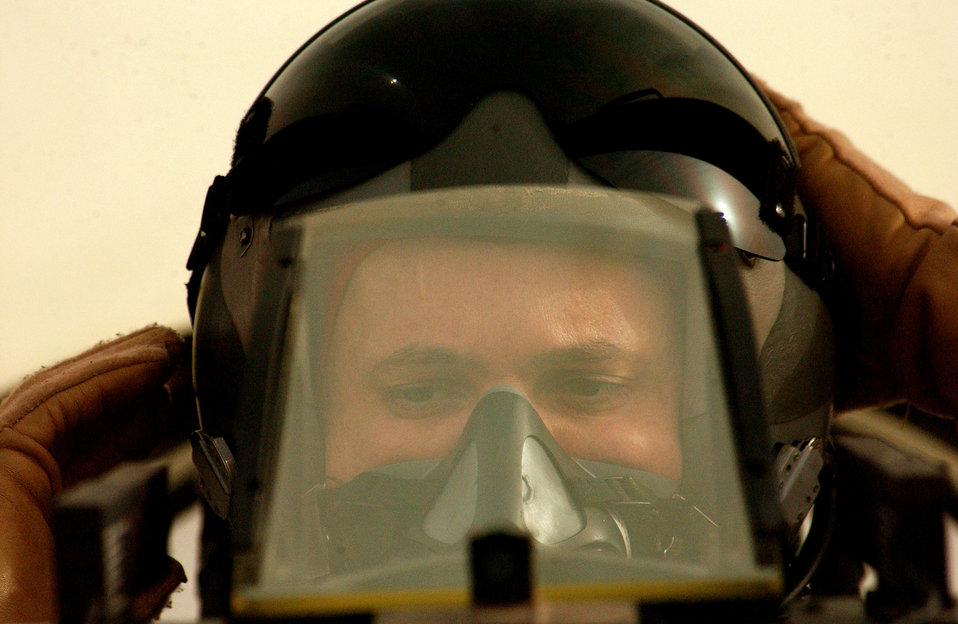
Gernert

OPERATION IRAQI FREEDOM -- Maj. Dan Gernert, an F-16CJ aircraft pilot deployed from the 77th Fighter Squadron, Shaw Air Force Base, SC, to the 363rd Expeditionary Fighter Squadron, adjusts his oxygen mask prior to taking off for a mission on March 27, 2003. Aircraft move around the clock to support Operation Iraqi Freedom at a forward deployed location in southwest Asia. Operation Iraqi Freedom is the multi-national coalition effort to liberate the Iraqi people, eliminate Iraq's weapons of mass destruction, and end the regime ofSaddam Hussein.